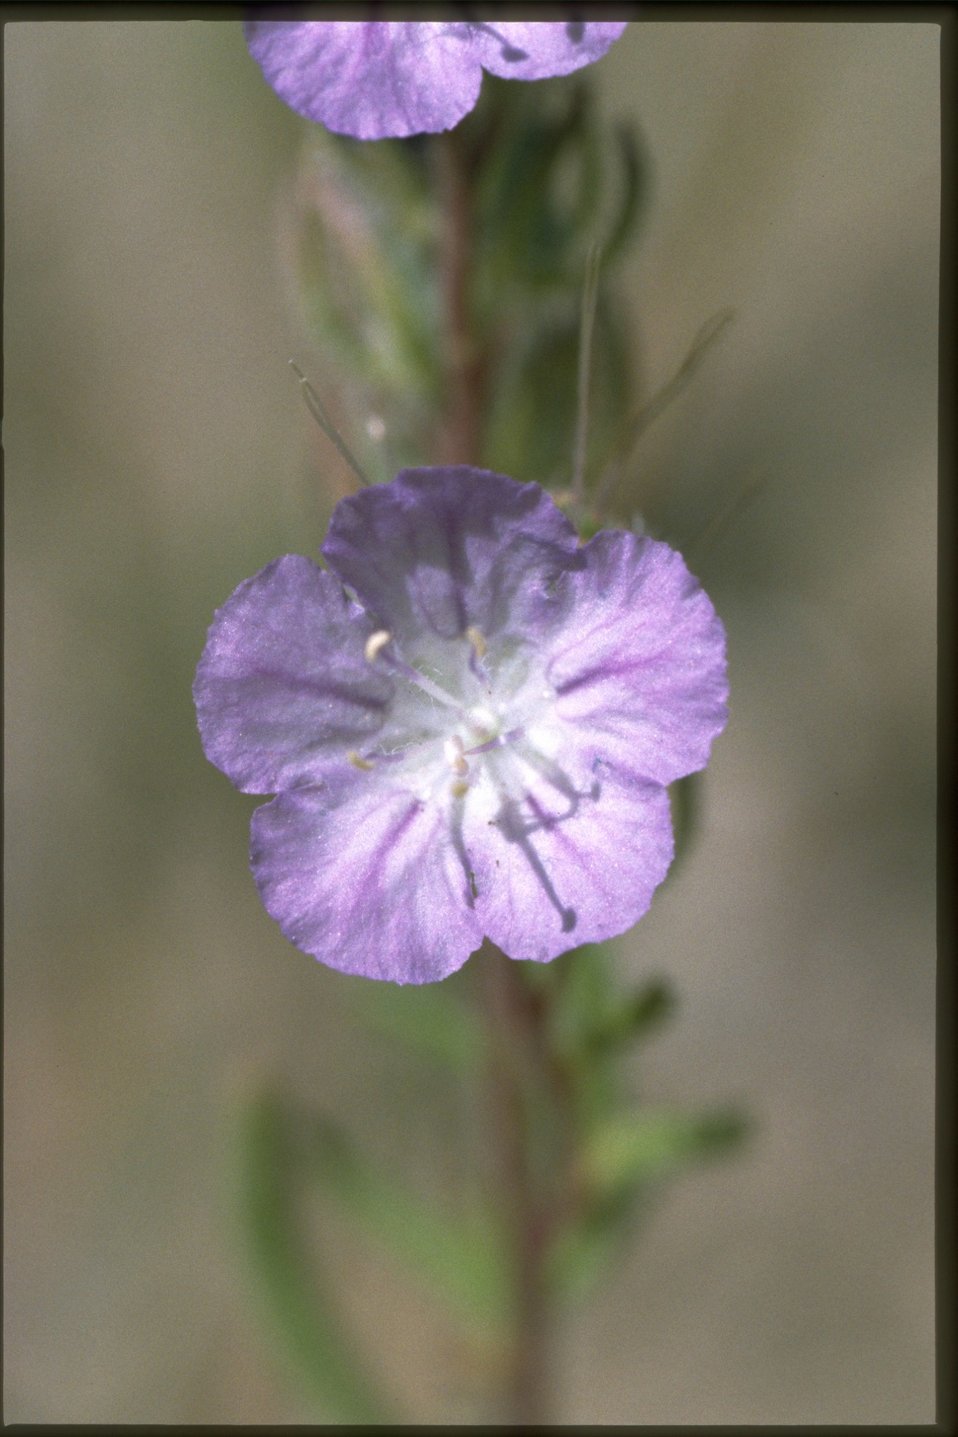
Closeup shot of Phocelia.